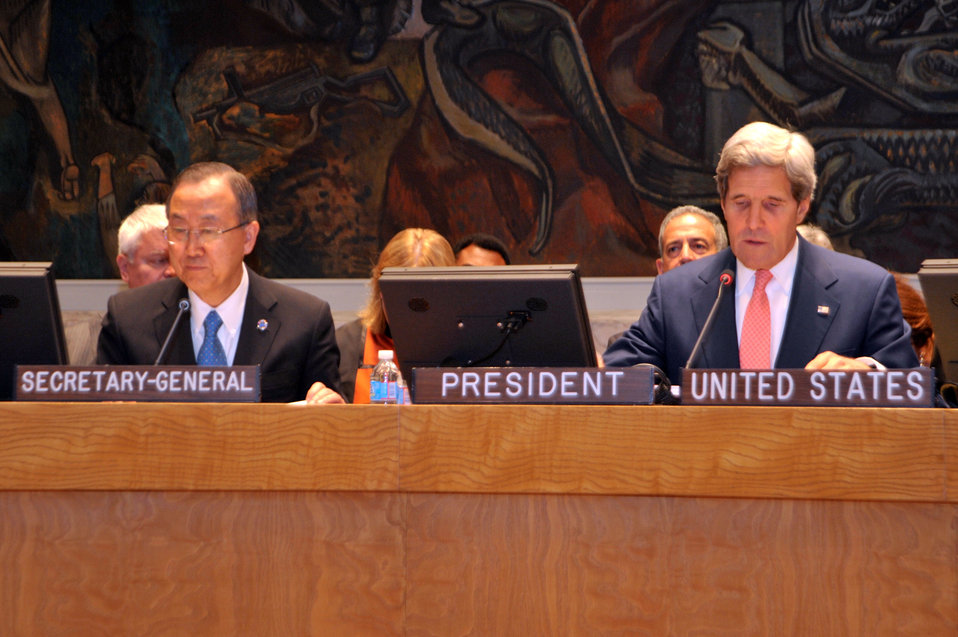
Secretary Kerry and UN Secretary General Ban Ki-moon Discuss Africa's Great Lakes Region

U.S. Secretary of State John Kerry, joined by United Nations Secretary General Ban Ki-moon, kicks off a discussion of Africa's Great Lakes region by the UN Security Council in New York City on July 25, 2013.